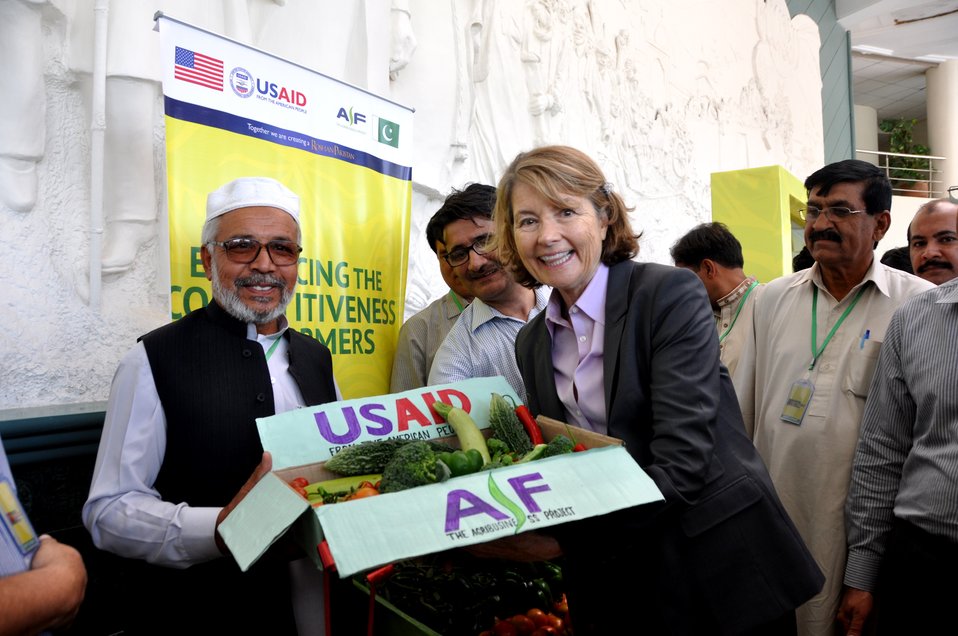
Pakistan Vegetable Fair 2014 (organized by USAID’s Agribusiness Project)

A farmer presenting a pack of fresh vegetables from his own Tunnel Farm.